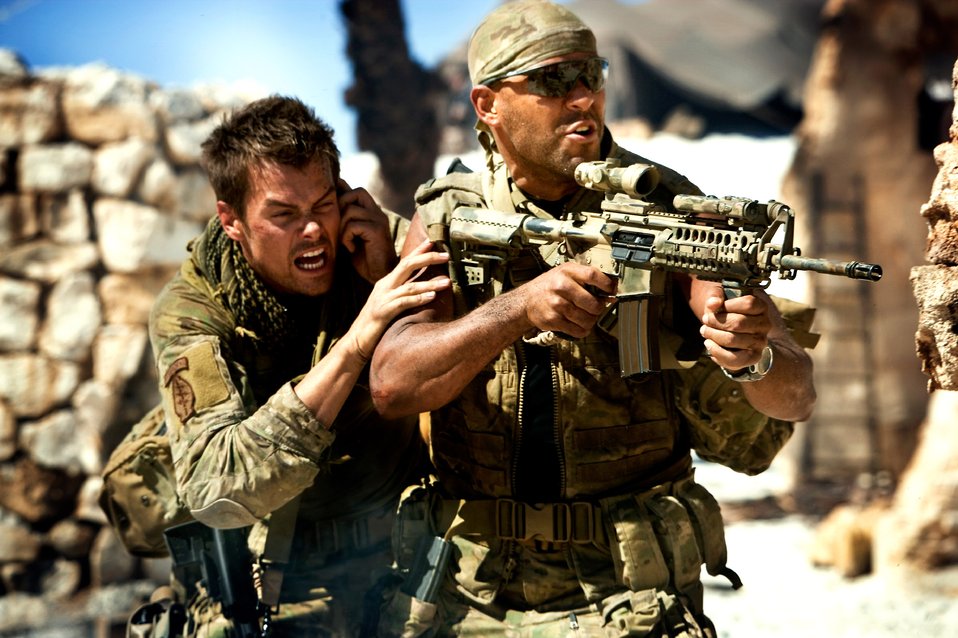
'Transformers' puts Airmen, aircraft on big screen

Captain Lennox (played by Josh Duhamel, left) and Jorge Figueroa (played by Amaury Nolasco) fend off an attack by an alien race in